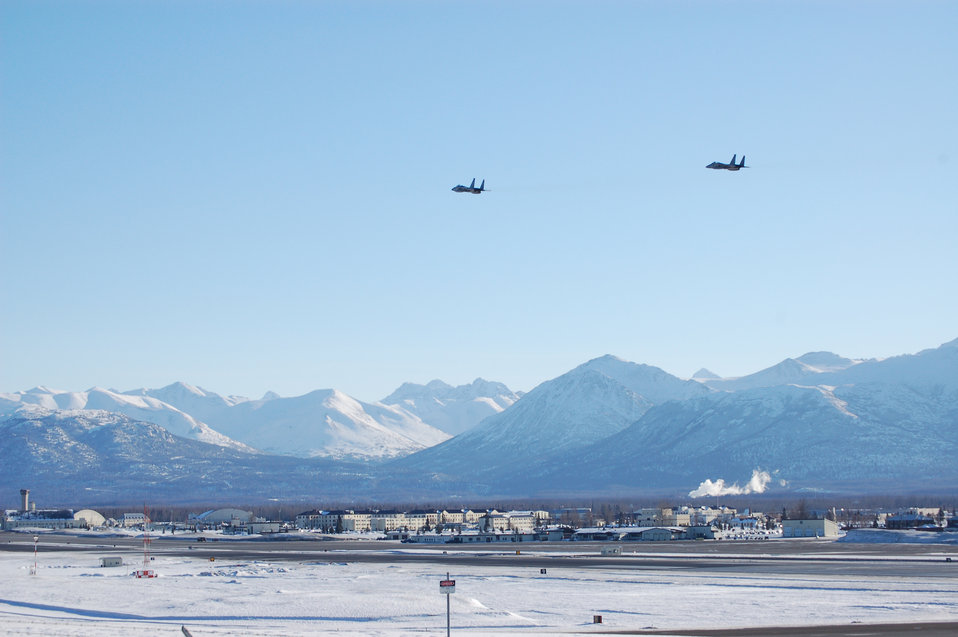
Elmendorf Airmen support PACAF operations

Two F-15E Strike Eagles fly over Elmendorf Air Force Base, Alaska, Feb. 21 after a training mission. The fighters are only one part of the base's capabilities that support operations in Air Force Pacific Command. The Strike Eagles are with the 90th Fighter Squadron.